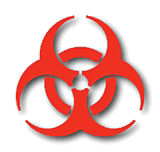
Biological hazard logo, small shaded version.